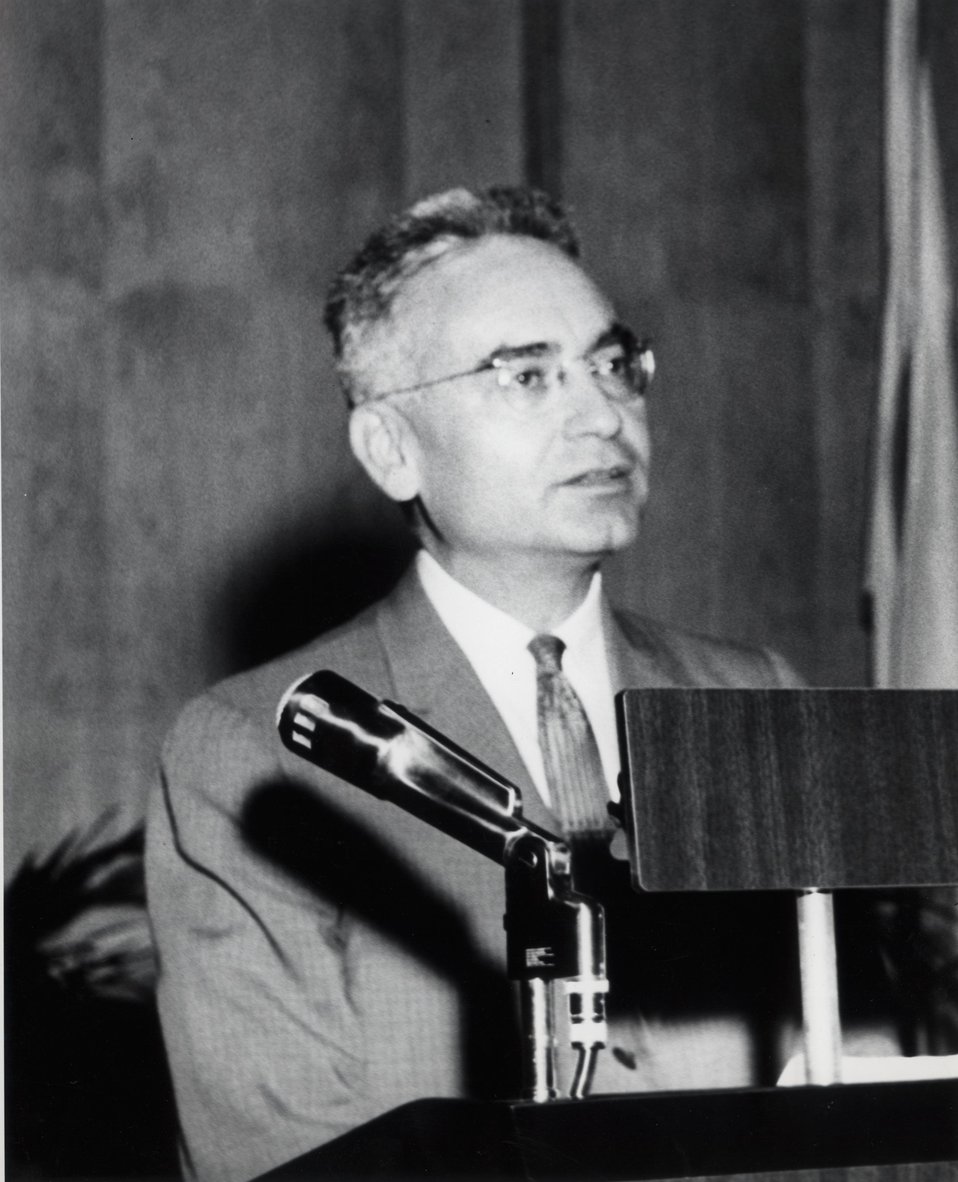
Alvin Weingberg, Lawrence Award, 6-27-60

.